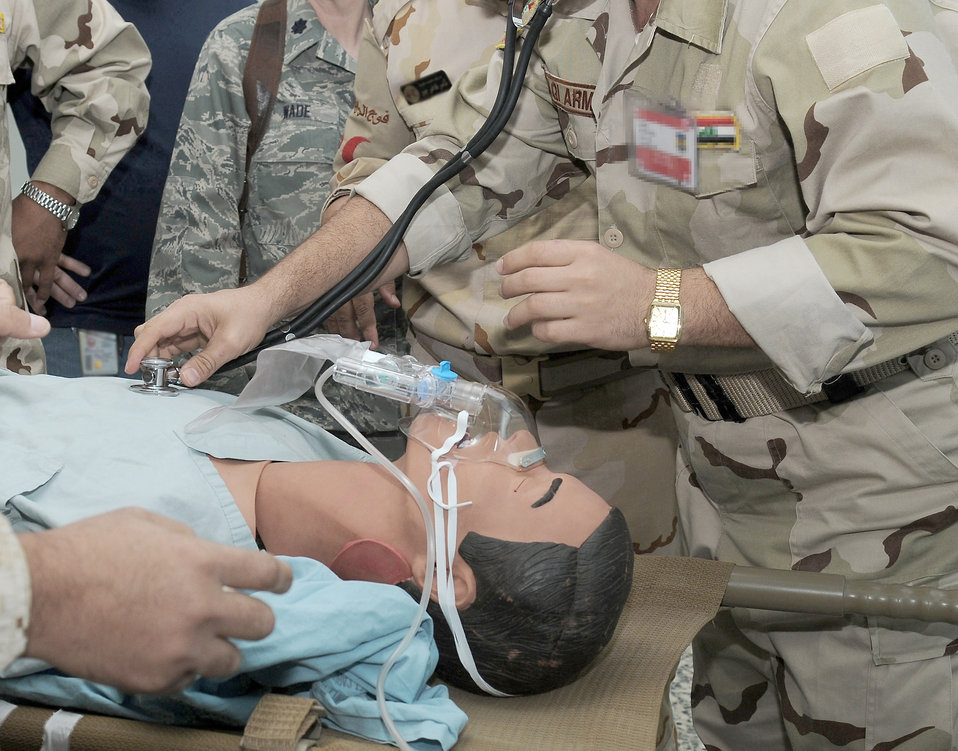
ICCO

Members of the Iraq army participating in the In-Country Clinical Observership Oct. 26, 2010, at Joint Base Balad, Iraq. The ICCO training includes advanced medical care skills, medical teamwork and medical administration for Iraq Army physicians and nurses.